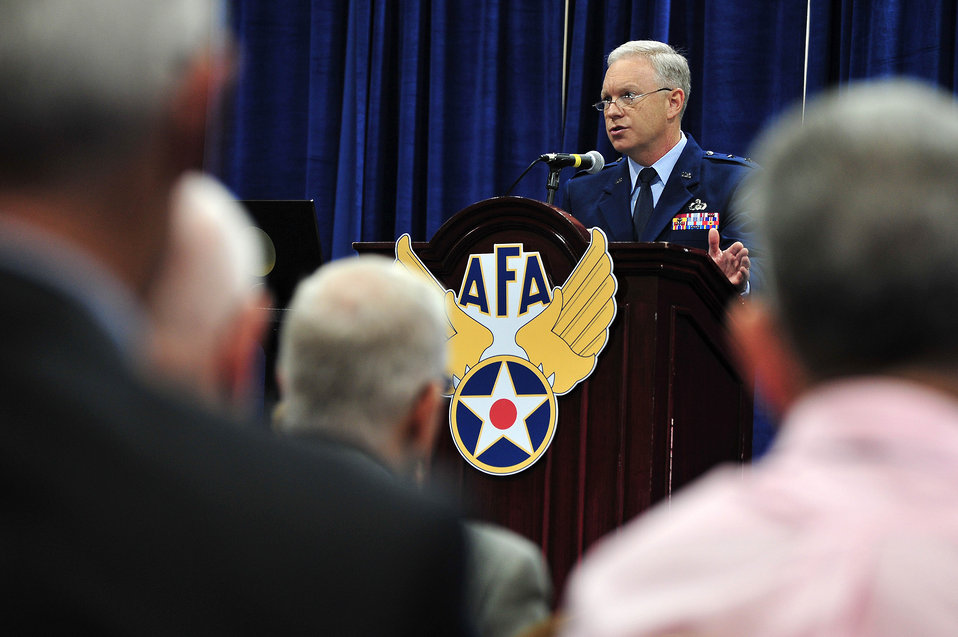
KC-46

Maj. Gen. John F. Thompson, KC-46 Tanker Program director, details the capabilities of the new air-refueling aircraft at the 2012 Air Force Association Air and Space conference in Washington, D.C., Sept. 18, 2012. Thompson said the KC-46 tanker will have 18 aircraft in place at air refueling wings by 2017.